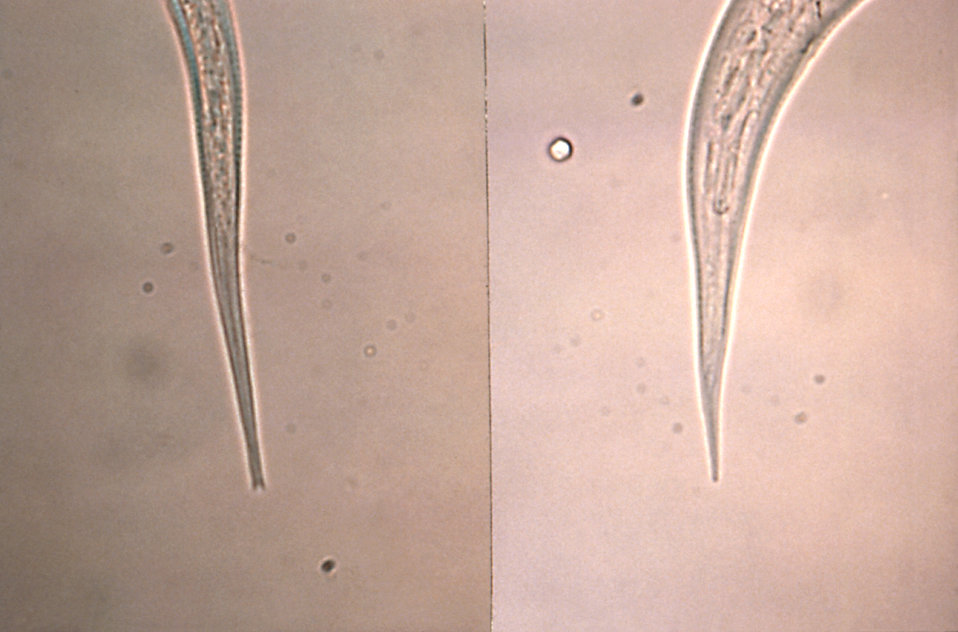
This micrograph depicts the tail tip of a Strongyloides filariform infective stage larvae on the left, and a hookworm on the right. Note the characteristic 'fork-shaped' tip of the Strongyloides' tail, which is a morphologic feature exhibited by this genus when in its filariform stage of development.